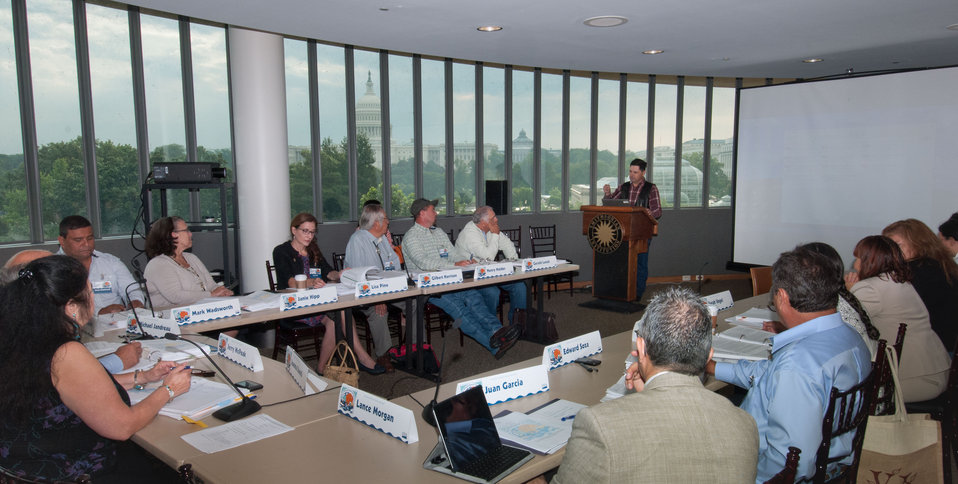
U.S. Department of Agriculture (USDA) Office of Tribal Relations (OTR) and the Intertribal Agriculture Council (IAC) Program Manager Zach Ducheneaux speaks at the first business meeting and public comment session of USDA's Council for Native American Farming and Ranching (CNAFR), held on Tuesday, Aug. 14, 2012 at the National Museum of the American Indian, in Washington, D.C. CNAFR was created to advise the Secretary on ways to eliminate barriers to participation for Native American Farmers and Ranchers in USDA programs. The Council was established as part of the Keepseagle settlement, and is conducted under the oversight of USDA's Office of Tribal Relations, which is part of the Office of the Secretary of Agriculture. The Director of Tribal Relations Joanna Mounce Stancil serves as Designated Federal Official (DFO) for the Council.